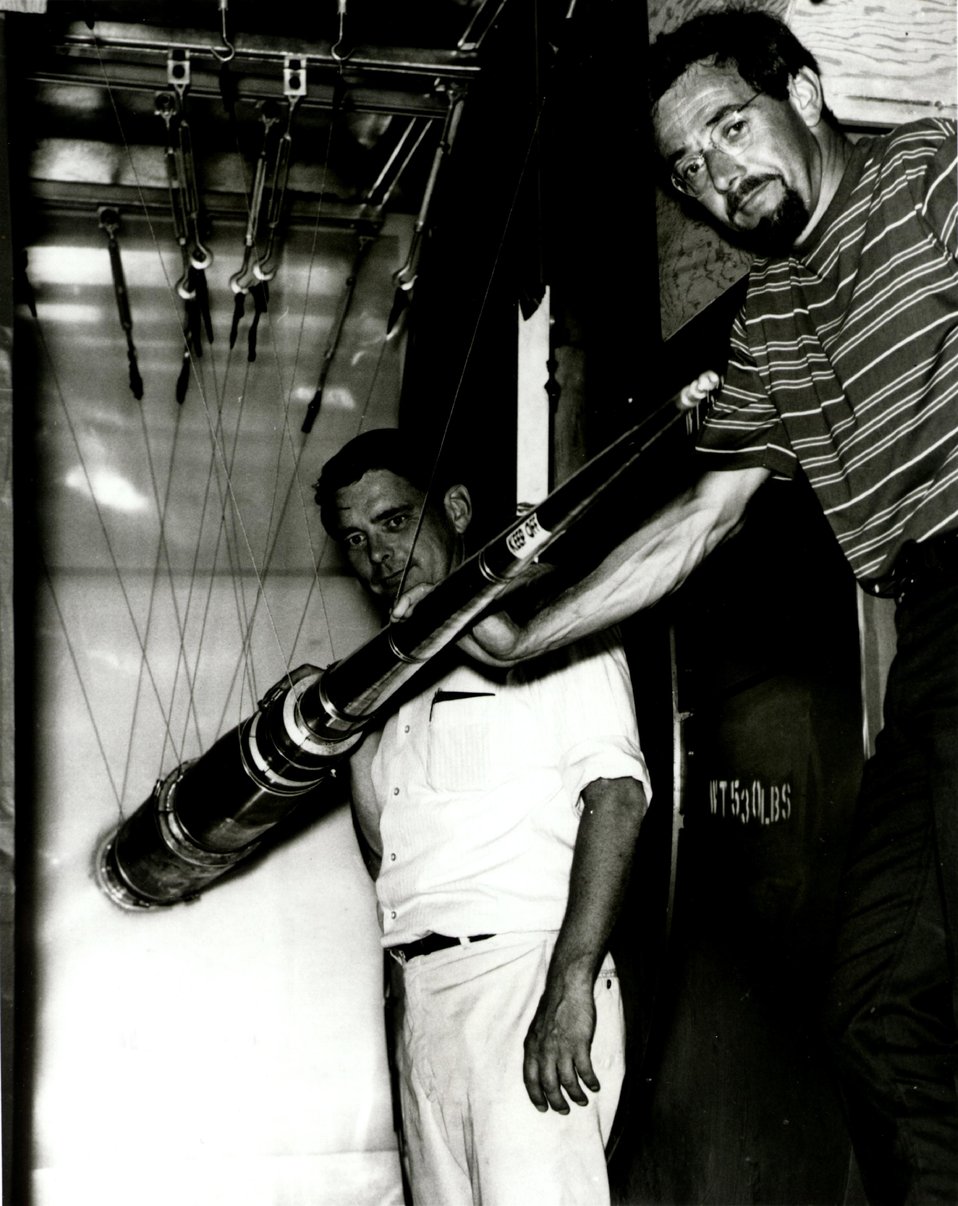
A superconducting shield 20 feet long made of niobium and tin was developed at the AEC's Stanford Linear Accelerator and allows electrons to go deflected through a magnetic field. Circa 1974.